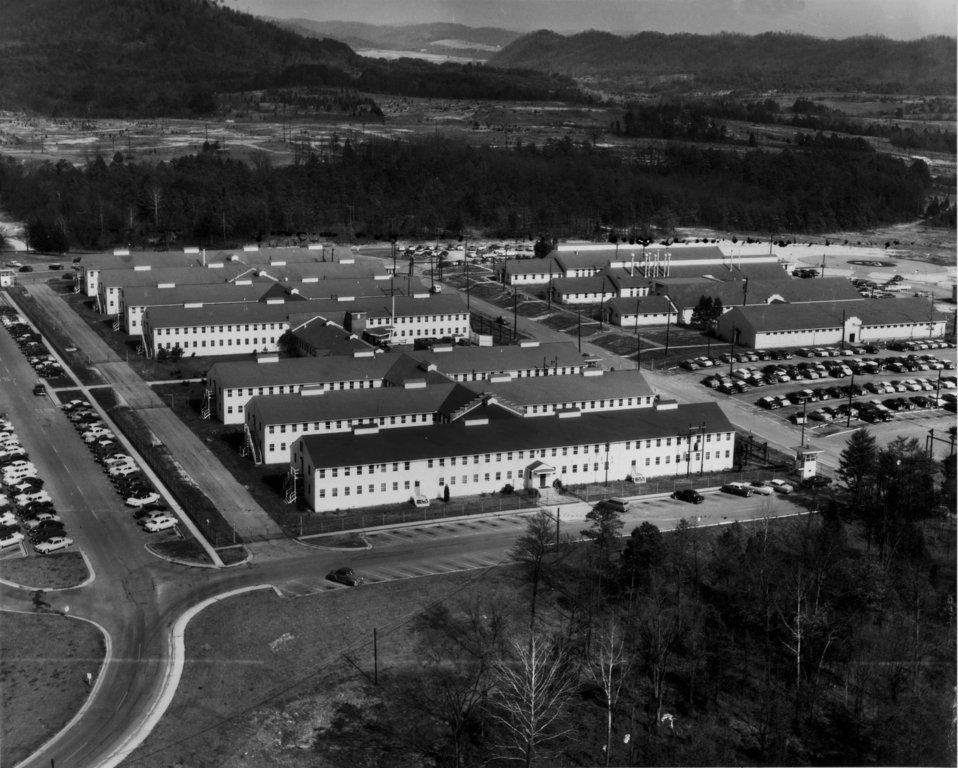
AEC Adm. Bldg. Oak Ridge

55-224 DOE photo by Ed Westcott 3-9-1955 Oak Ridge Tennessee